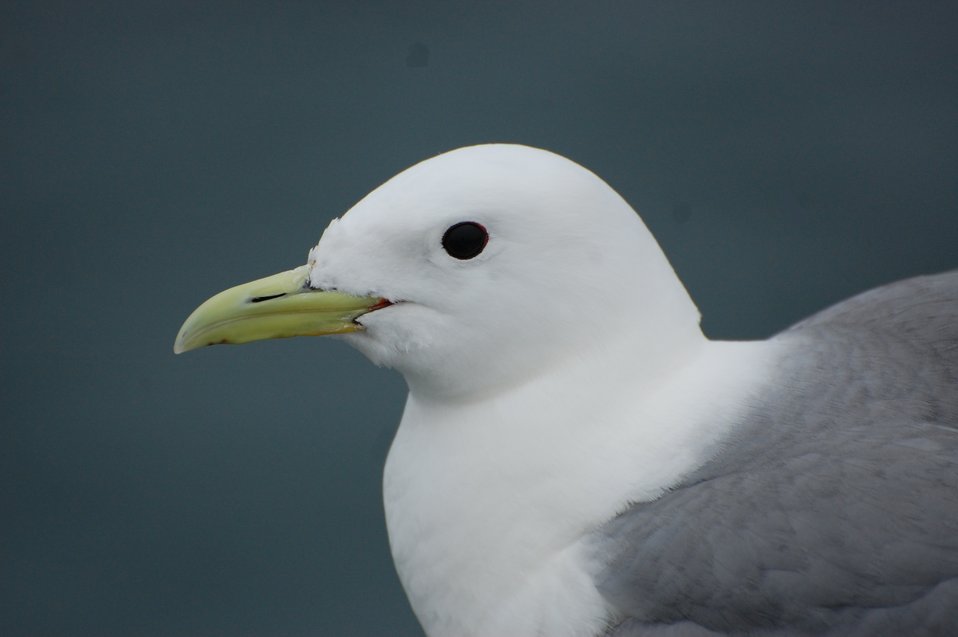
Black-legged Kittiwake

Izembek National Wildlife Refuge